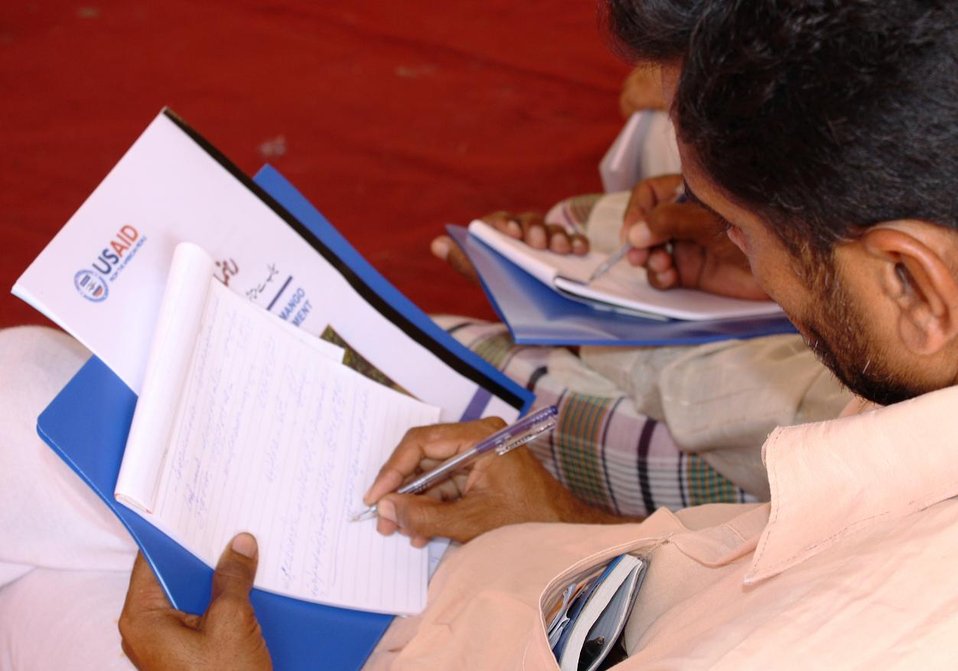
USAID helps Pakistan’s mangoes reach new export markets - 2

A farm worker makes notes during a training on “Post Flood Mango Orchard Management” as part of a USAID capacity building program to help farmers learn techniques that safeguard flood affected mango orchards.